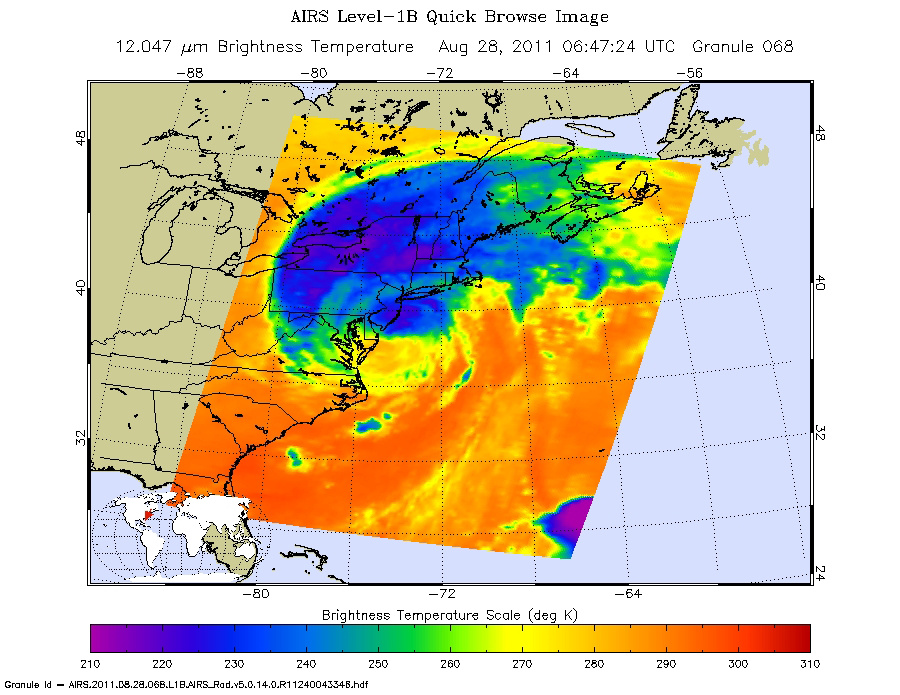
National Aeronautics and Space Administration, (NASA): Hurricanes/Tropical CyclonesNASA Satellite Shows a Mean Irene's Fury